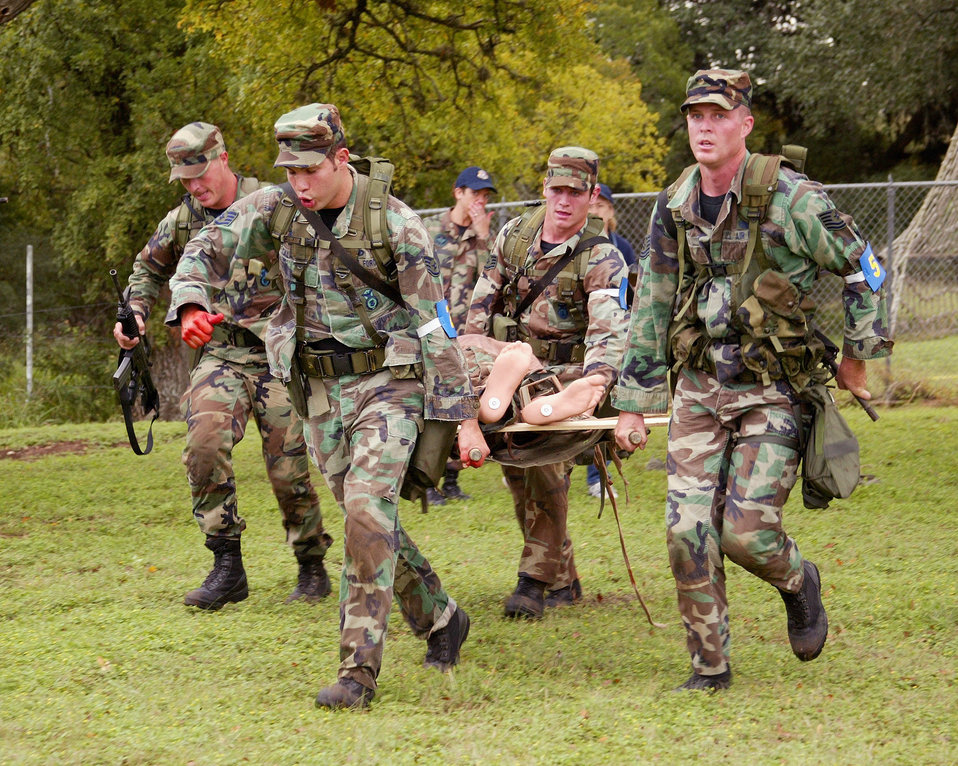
Defender Challenge '03

CAMP BULLIS, Texas -- Defender Challenge competitors from the Air Education and Training Command team move a